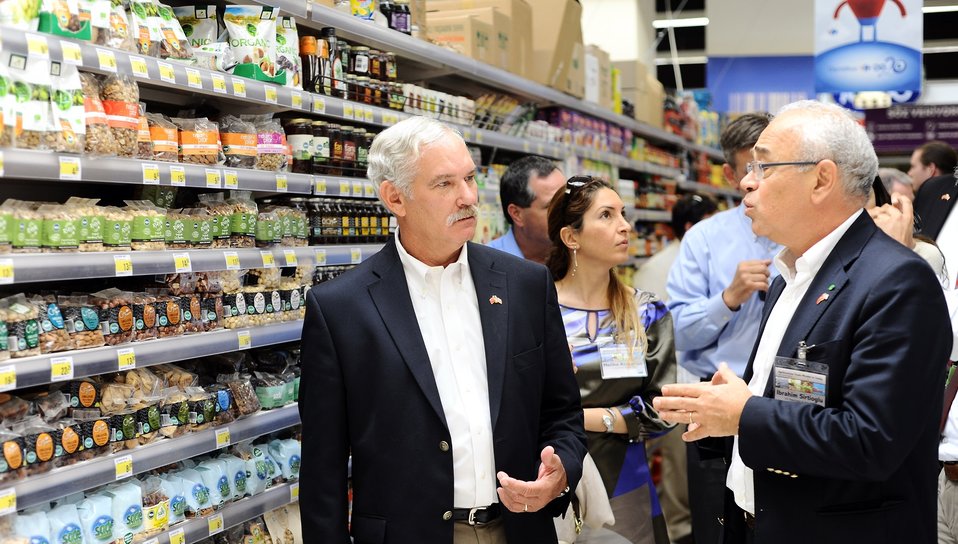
Acting Agriculture Deputy Secretary Michael Scuse tours the Carrefour supermarket in Istanbul, Turkey on Monday, Jun. 10, 2013. Deputy Secretary Scuse leads the Agibusiness Trade Mission to Turkey to promote U.S. agricultural exports to Turkey. Representatives from Iowa, Minnesota, Missouri, Nebraska, North Dakota, and Pennsylvania, as well as 20 U.S. companies are participating.